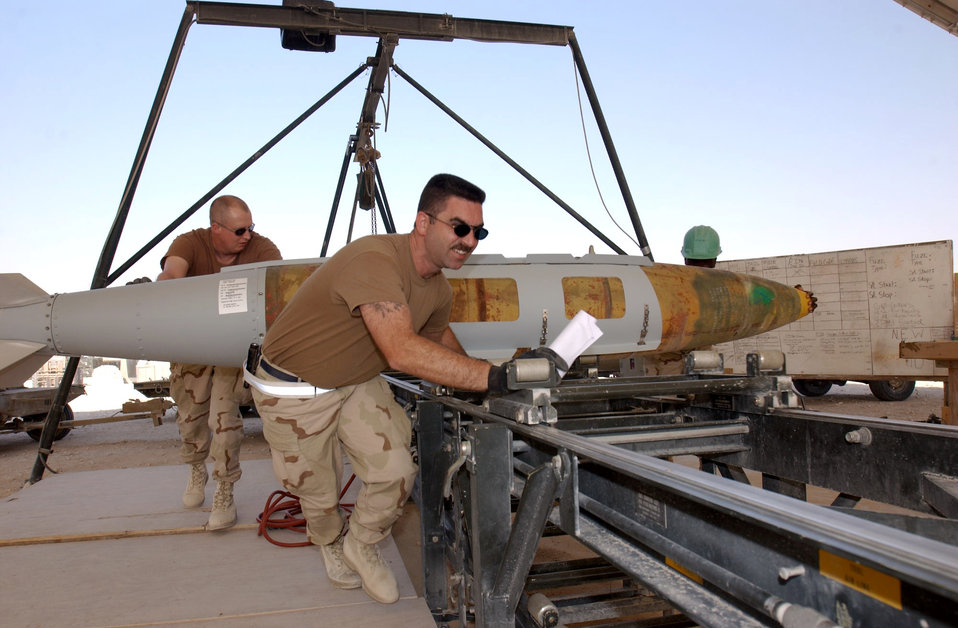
GBU-31

OPERATION IRAQI FREEDOM – Tech. Sgt. Chris Hickman, Master Sgt. Greg Lewis and Senior Airman Gerald Brown, all with the 379th Expeditionary Maintenance Squadron’s ammo flight, move a GBU-31 Joint Direct Attack Munition into position for disassembly and shipment at a forward-deployed location.